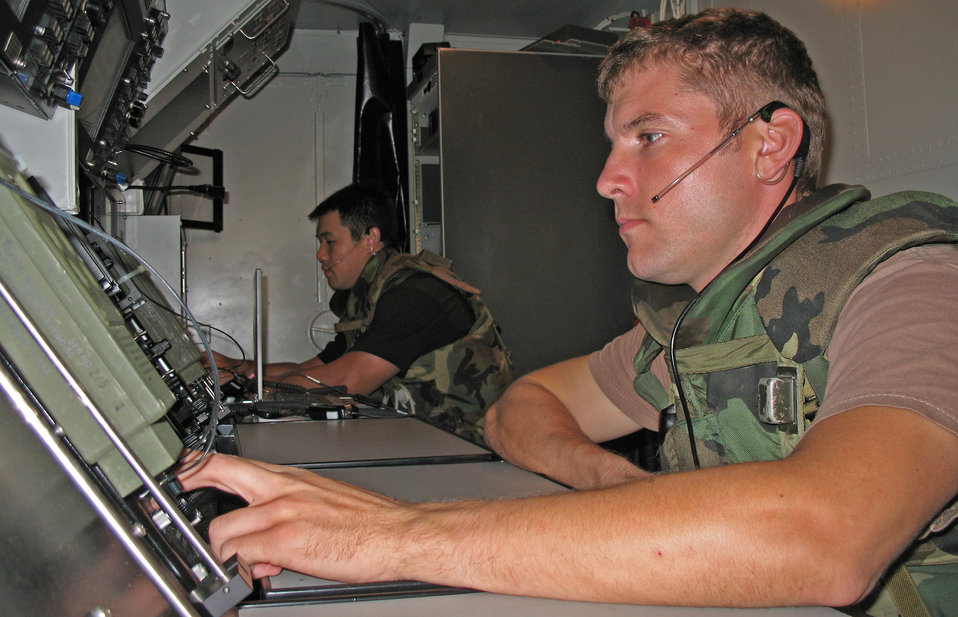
Hawaii air traffic controllers train to fight

Tech. Sgts. Daniel Keefe and William Chang monitor radar screens during an exercise at Naval Station Barber's Point, Hawaii, on July 25. The Airmen are with the Hawaii Air National Guard's 297th Air Traffic Control Squadron.